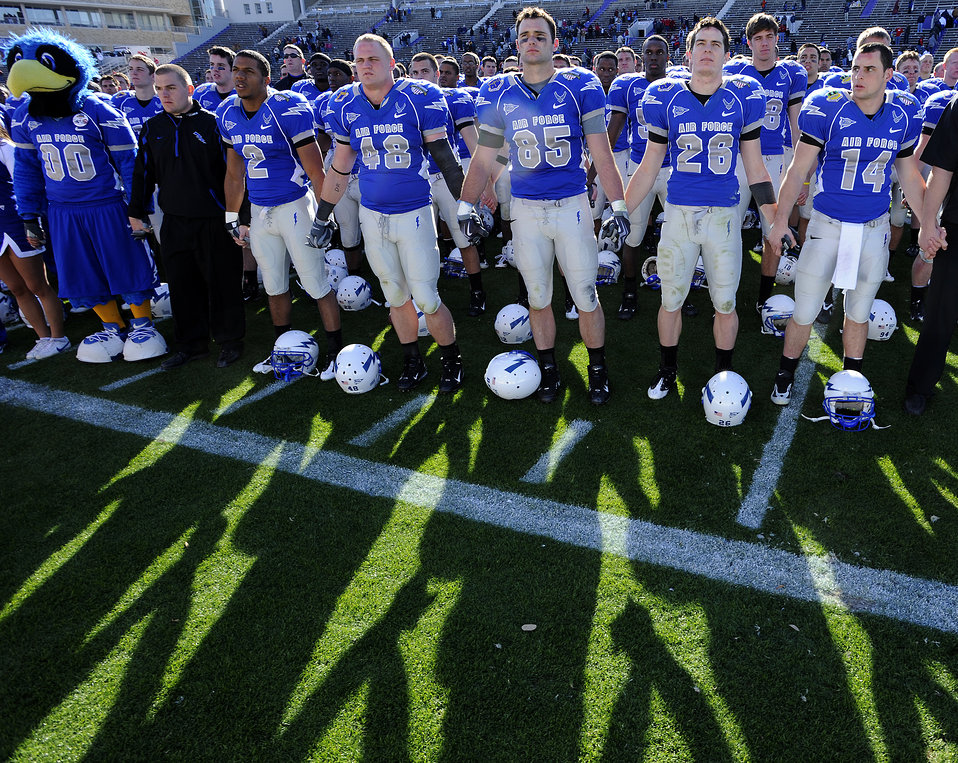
Honoring alumni

U.S. Air Force Academy football players stand together in honoring alumni and fans at the conclusion of the Bell Helicopter Armed Forces Bowl game between the U.S. Air Force Academy and the University of Houston Dec. 31 in Fort Worth, Texas.